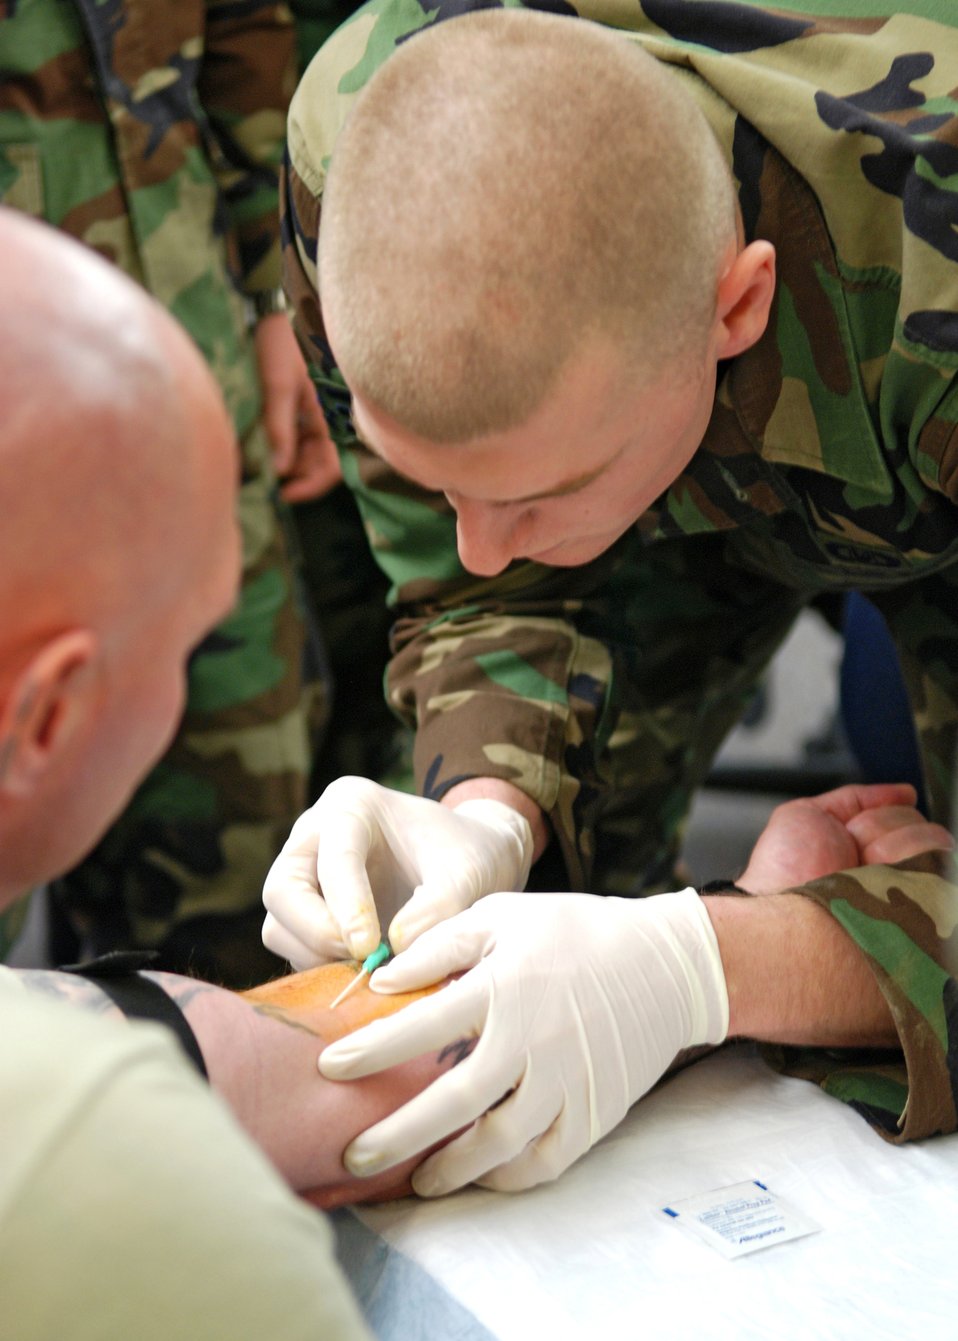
Combat Lifesaver Course

Senior Airman Tyler Harrington, a 22nd Training Squadron SERE specialist, practices the insertion of intravenous fluids into the arm of Army Staff Sgt. Patrick Kling, a drill sergeant and combat lifesaver course instructor.